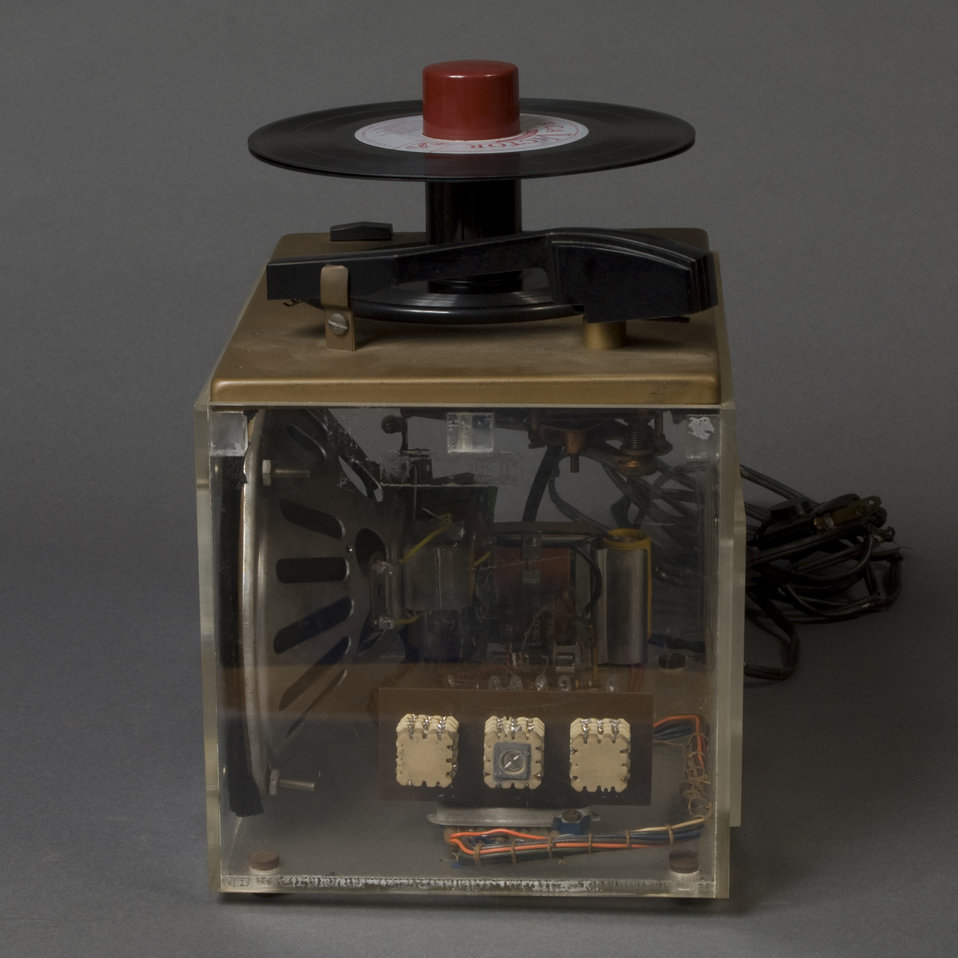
Project Tinkertoy